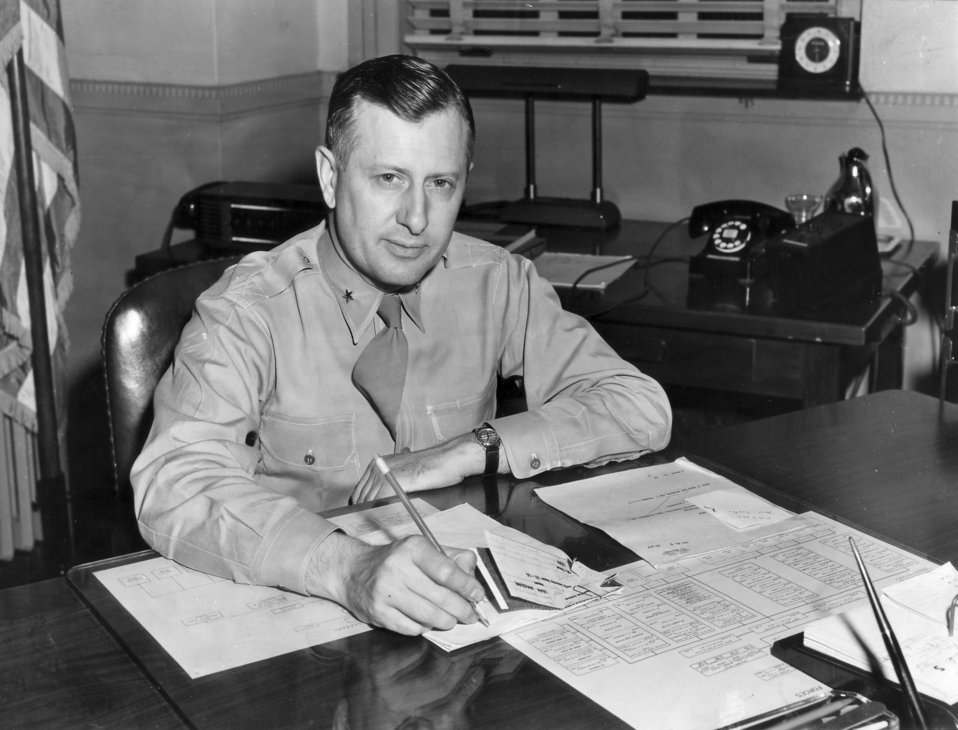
Brig. Gen. William H. Tunner

1940's -- Brig. Gen. William H. Tunner, 1943. Directed Berlin Airlift operation.